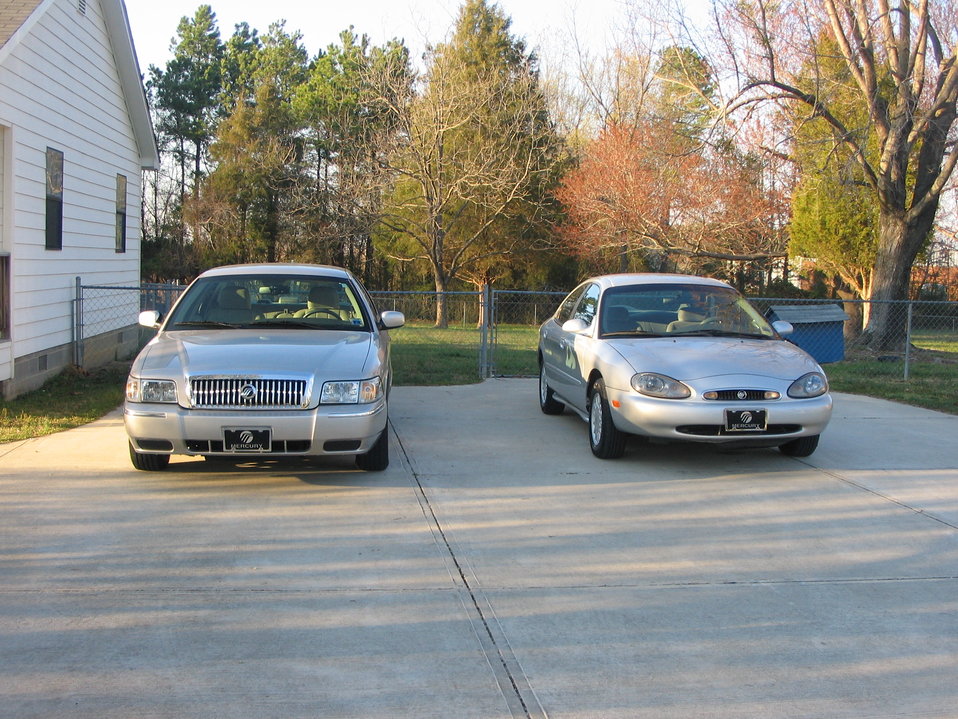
en:Category:Images of automobiles